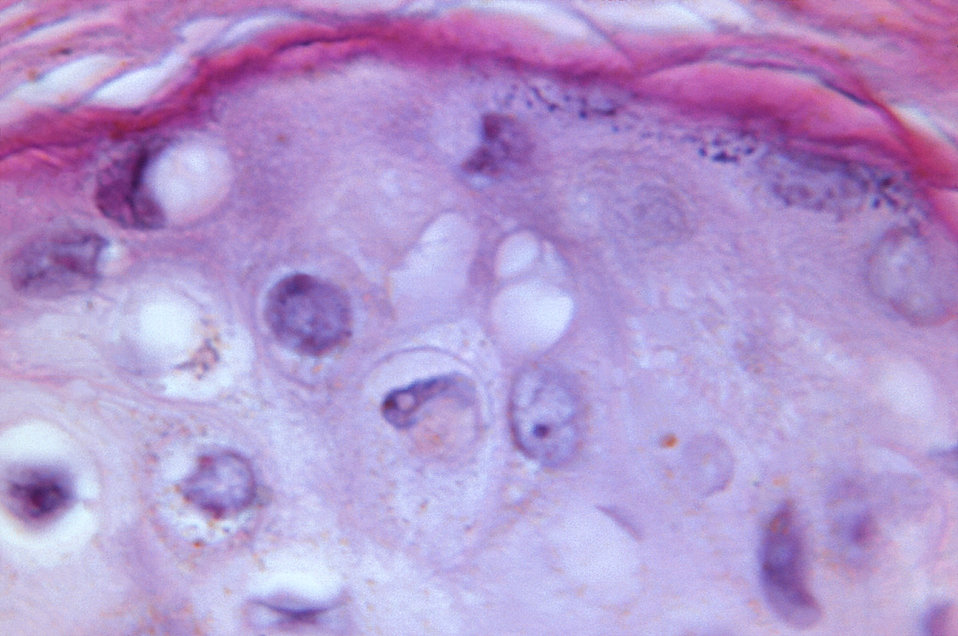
At a magnification of 1125x this photomicrograph revealed some of the histopathologic cytoarchitectural changes, which manifest inside the confines of a smallpox, variola maculopapular lesion. Note the reduction in the normal thickness of the stratum corneum, which at first glance from a macroscopic appearance may appear exophytic in nature, but is really pseudoexophytic. See PHIL 10396 for another view of this cytoarchitectural region, under a lesser magnification.